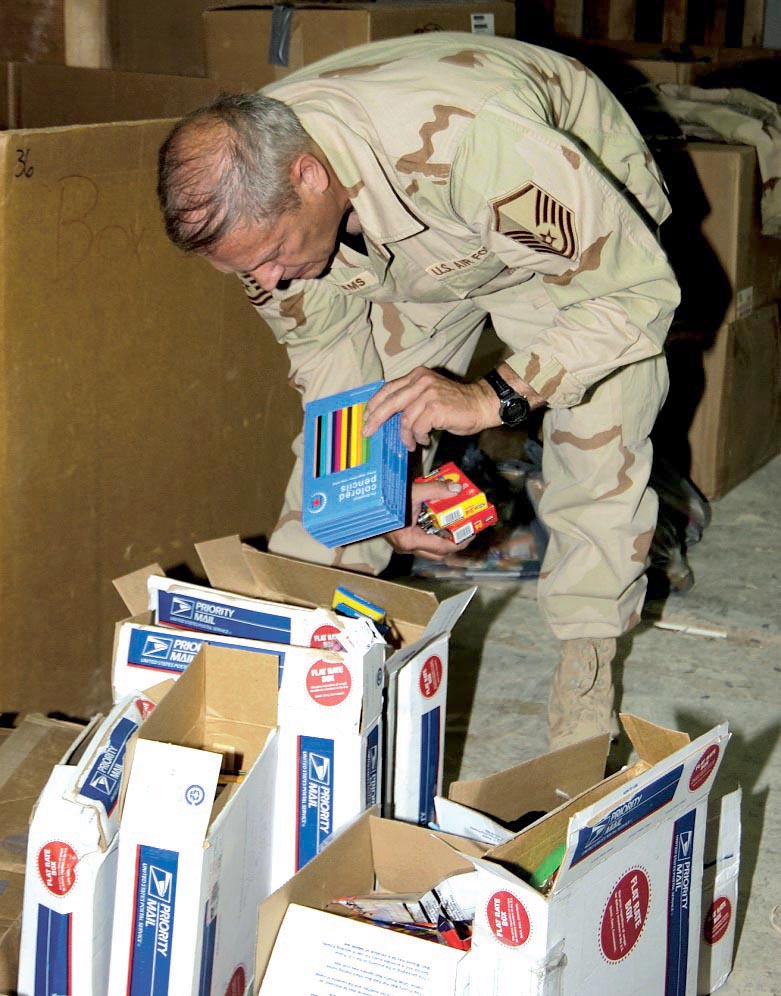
Volunteers collect supplies for local Iraqi schools

KIRKUK AIR BASE, Iraq -- Master Sgt. Michael Abrams sorts school supplies to make packets for local schools. He is assigned to the 506th Expeditionary Logistics Readiness Squadron.